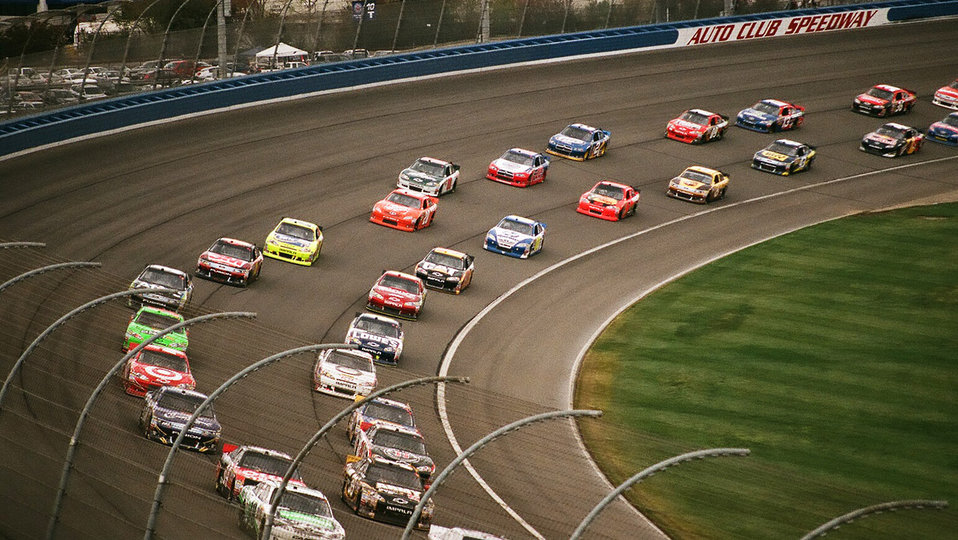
Nascar yellow flag lineup

In preparation for the green flag restart, nascar race cars take their appropriate lineup in the order they were in before the yellow caution flag came out..